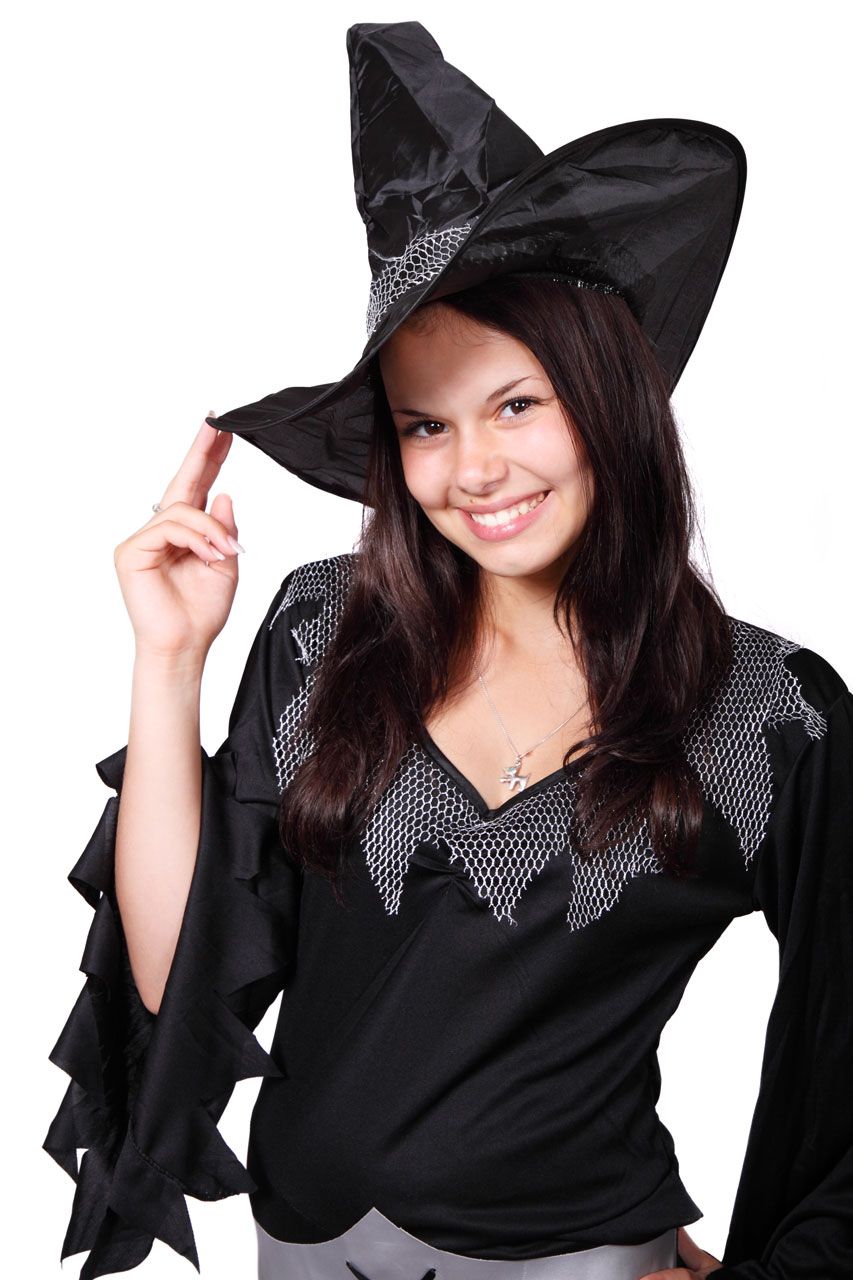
Cute witch

Cute halloween witch smiling.